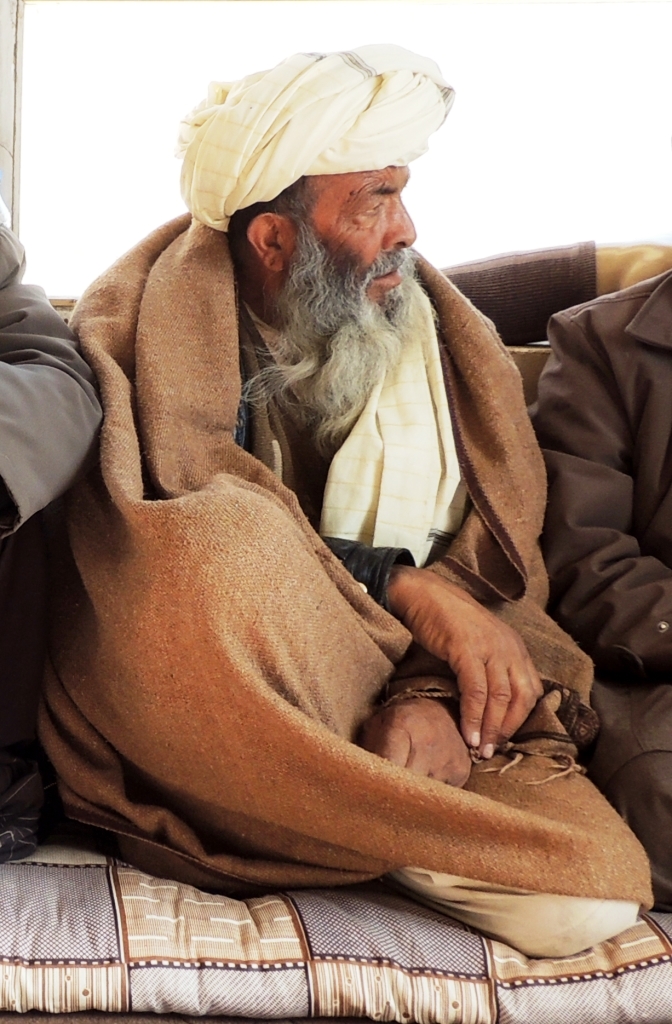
Nerkh District Villagers in communication plan meeting

With SIKA-East facilitation, and as part of its outreach capacity building component, the Nirkh DDA Communication Committee members meet to discuss and formulate the district communication plan – a strategy to utilize locally available resources to improve communication flows between the district government, the DDA and the constituents.